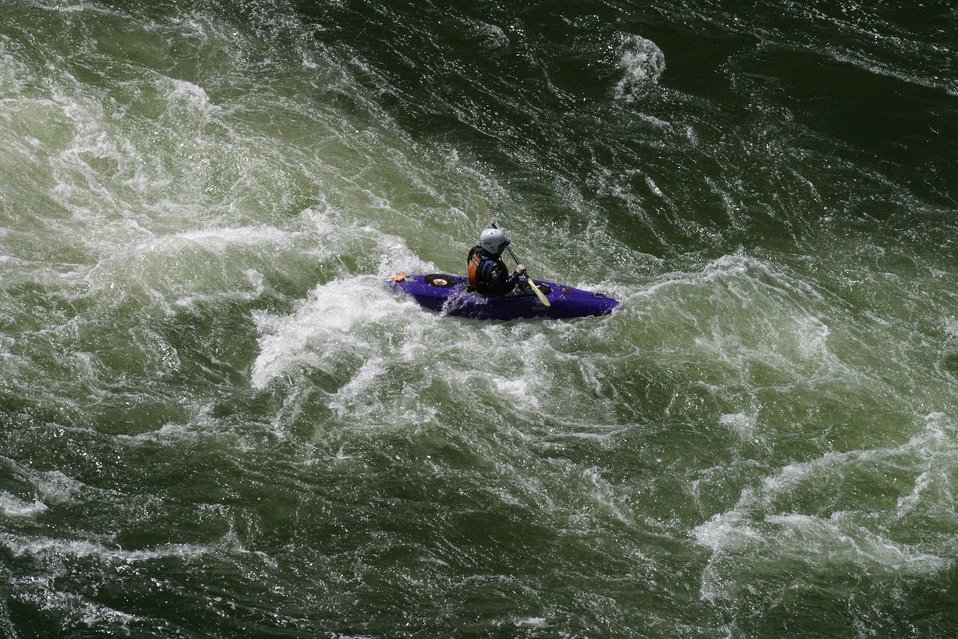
Boater at Grave Creek Falls